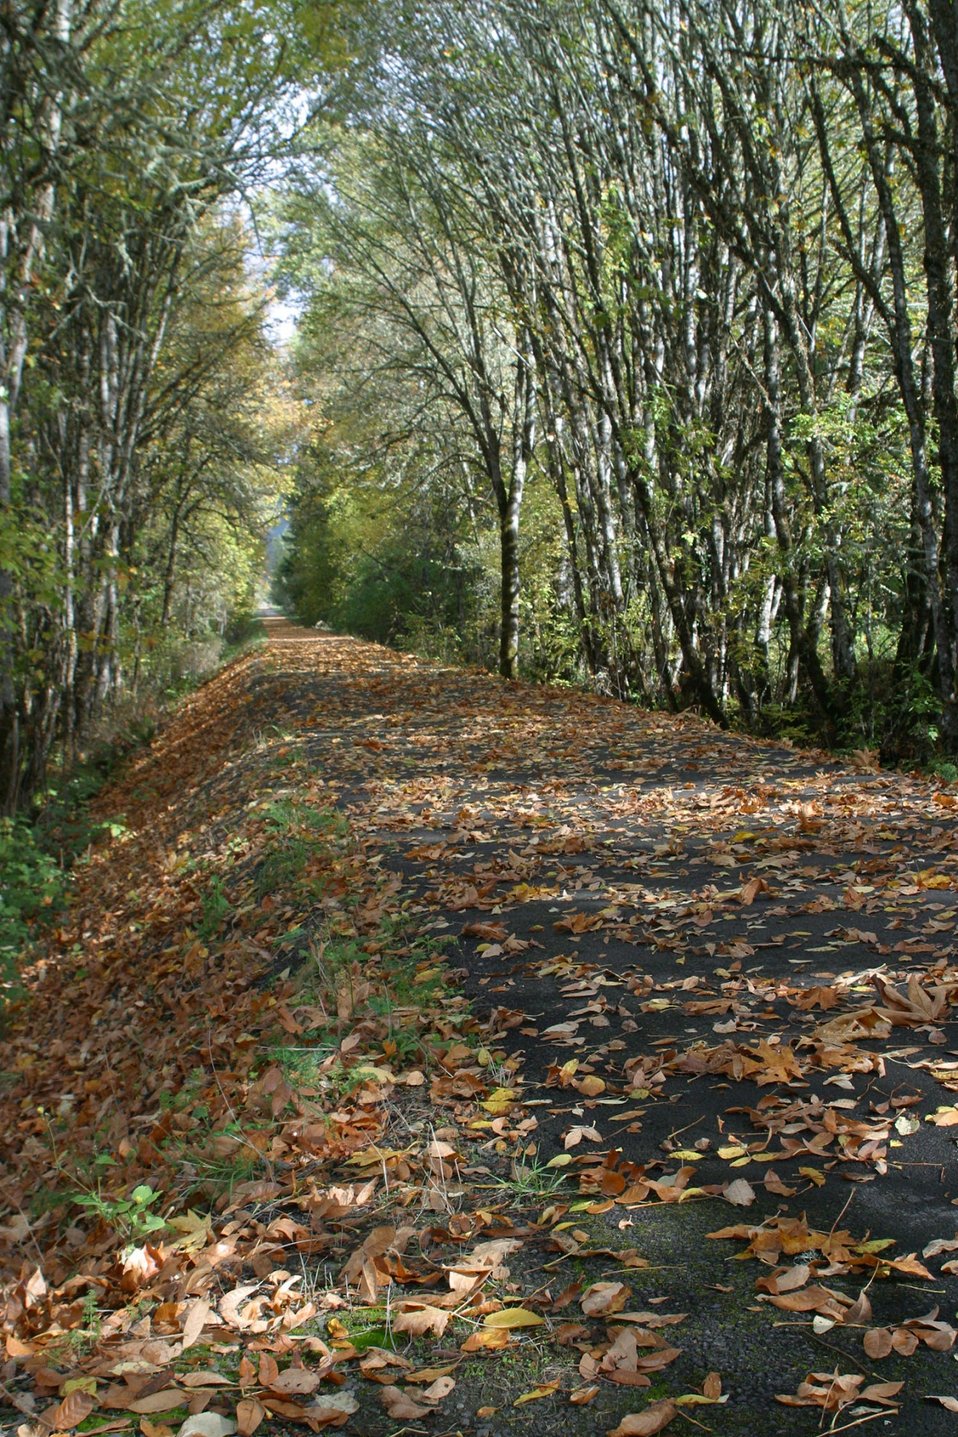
The the 15.6 mile Row River Trail trail not only attracts mountain bicyclists and horseback riders, but also road bicyclists and even a few in-line skaters.